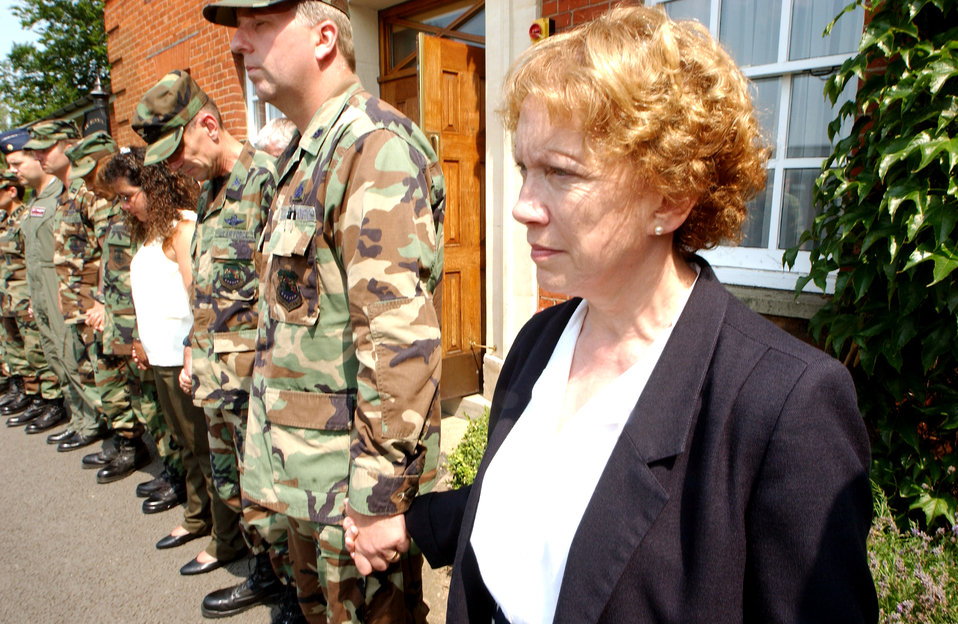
U.S. servicemembers join two-minute tribute to terrorist victims

ROYAL AIR FORCE MILDENHALL, England -- Maggie Cotner (right) and Lt. Col. Larry Walker, along with other people here, join hands to observe a two-minute silent tribute July 14 at noon. The tribute was done to pay respect to the people who lost their lives during the terrorist attacks in London on July 7.